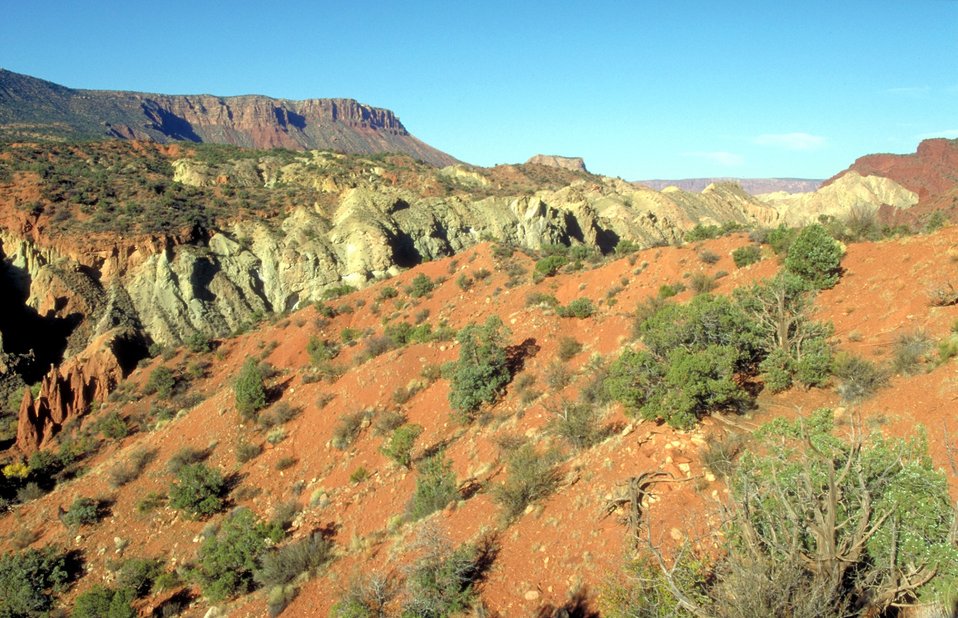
Landscape in Onion Creek drainage, Fisher Mesa in background.